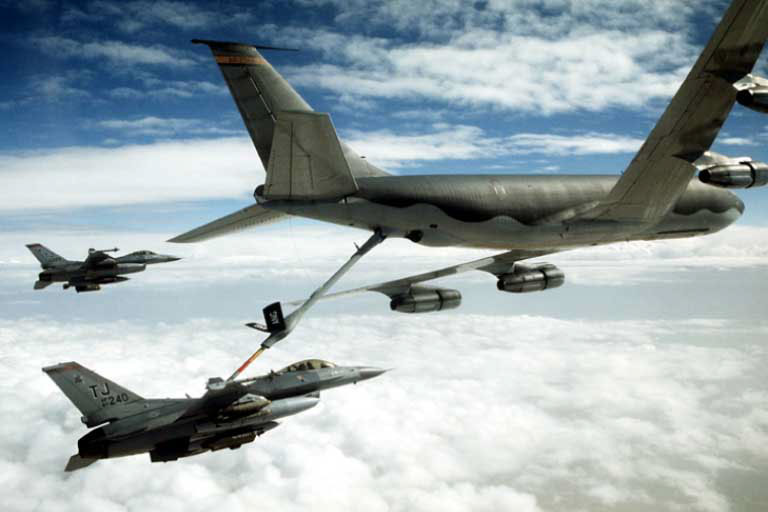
KC-135 refueling F-16s